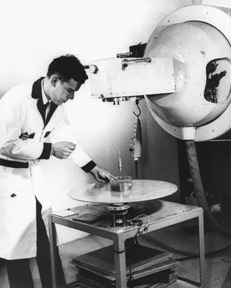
Biology Department technician preparing to irradiate seed sample in an x-ray machine.